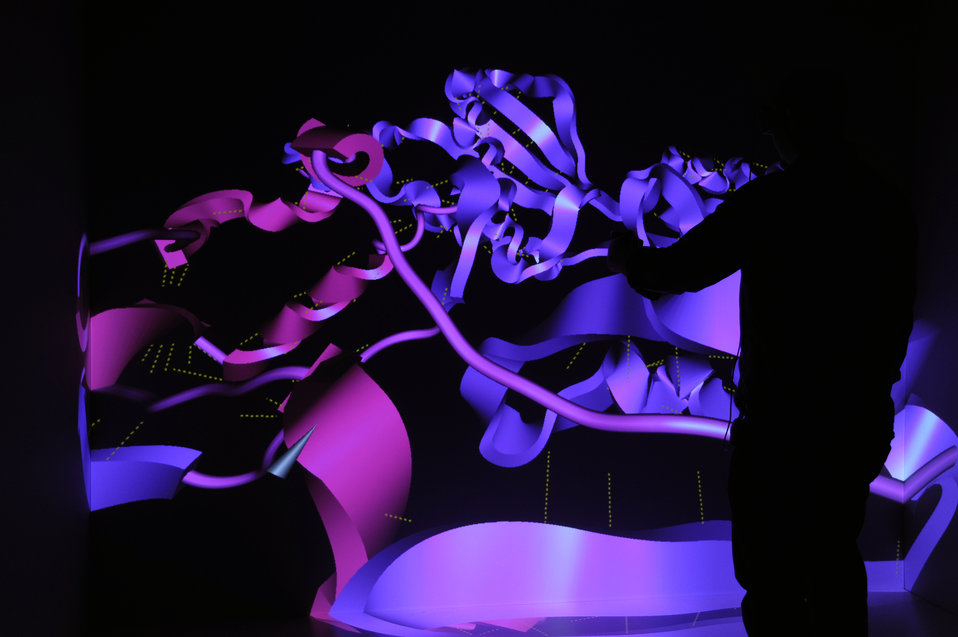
Researchers can examine and manipulate 3-d protein models using the Computer-Assisted Virtual Environment (CAVE) at INL's Center for Advanced Energy Studies.